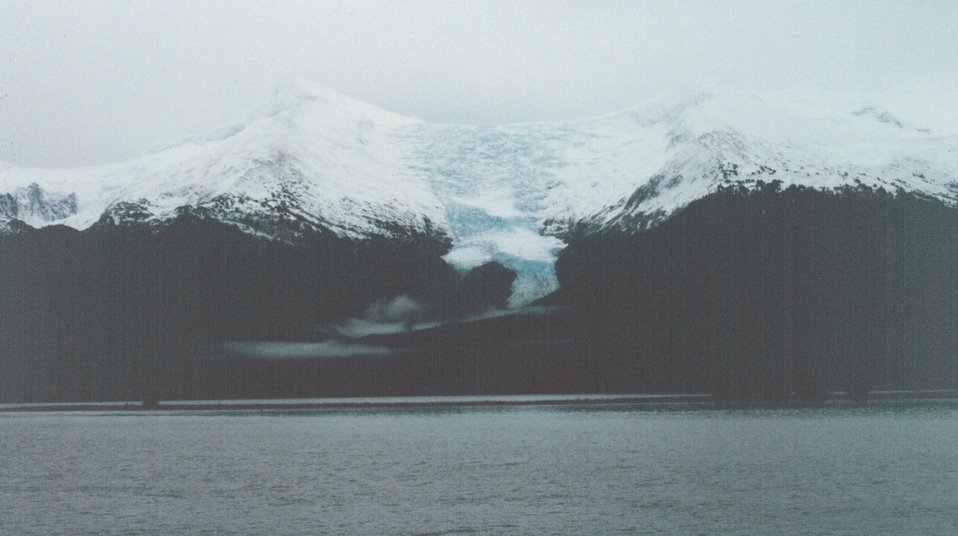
The Sumdum Glacier overlooking Holkham Bay